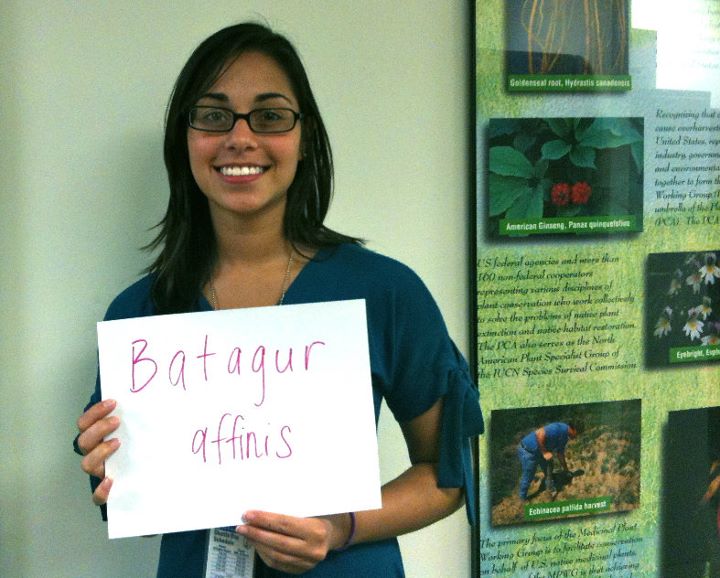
Marina Askari, 'Batagur affinis,'

International Affairs participates in FFI's In Our Hands campaign